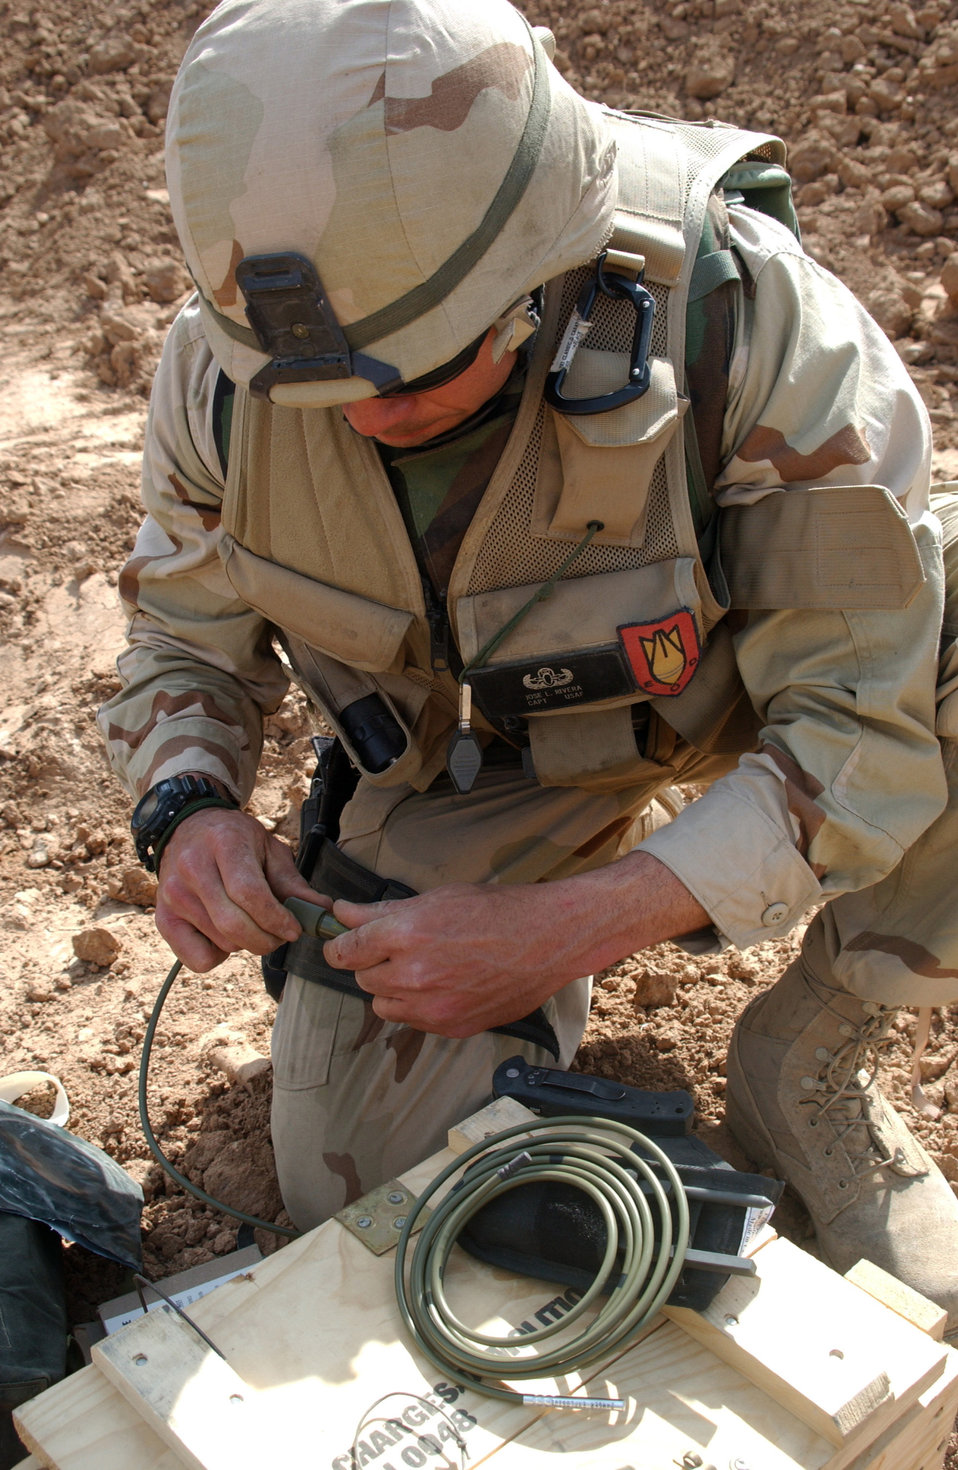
300 rounds

KATAN ALKABER, Iraq -- Capt. Jose Rivera prepares the inginiter time-blasting fuse for destroying more than 300 100 mm armor piercing rounds during an ammunition cache demolition here April 7. Capt. Rivera is a member of 506th Expeditionary Civil Engineer Squadron.